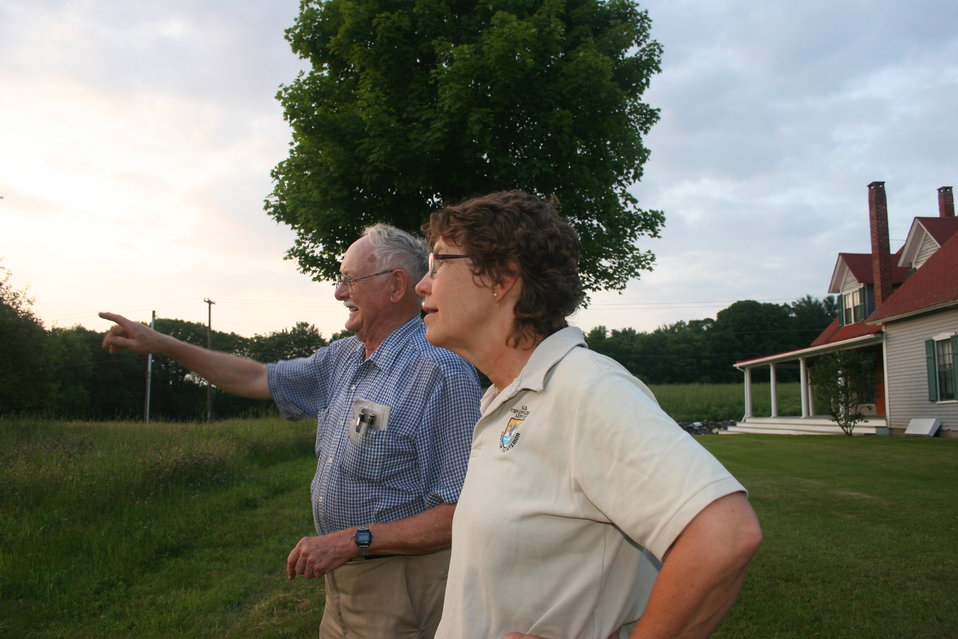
Landowner and USFWS biologist Susi von Oettingen.